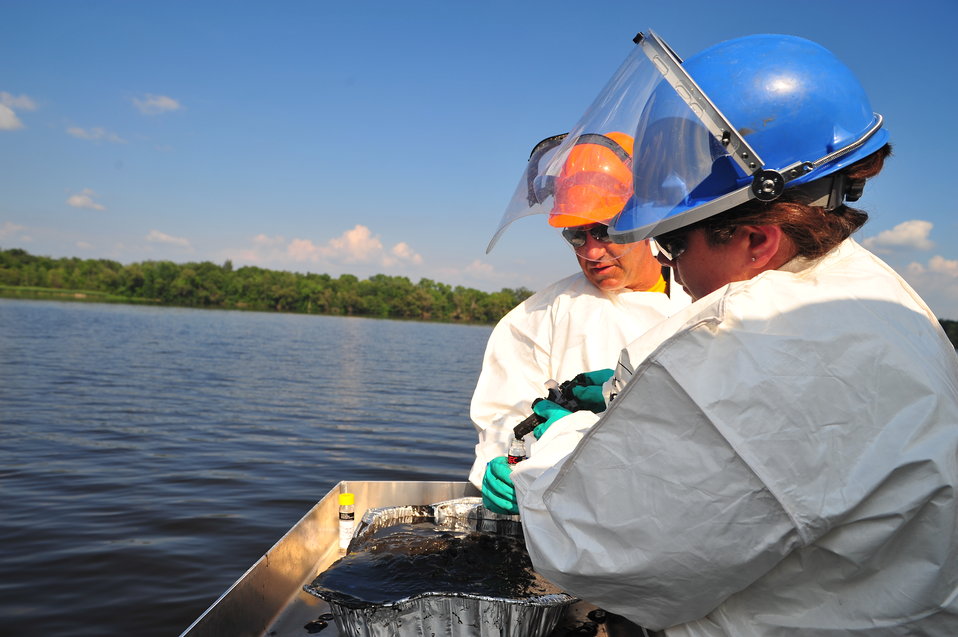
EPA's response to the Enbridge oil spill

August 2, 2010 - Water and sediment sampling operations during Enbridge Spill Response on Morrow Lake near Battle Creek, Michigan from Mudpuppy II, EPA's news research vessel.